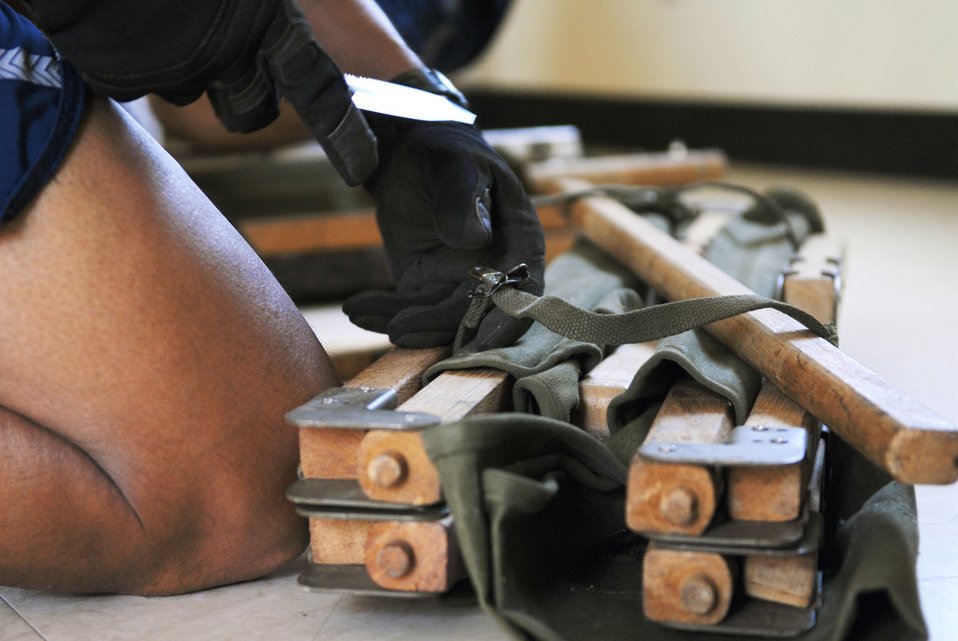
Preparing a city

An Airman unpacks and assembles a cot July 29 in preparation for Ulchi Freedom Guardian at Osan Air Base, South Korea. More than 550 military members will participate in the August exercise. UFG is a regularly scheduled summer exercise involving forces from both South Korea and the U.S.